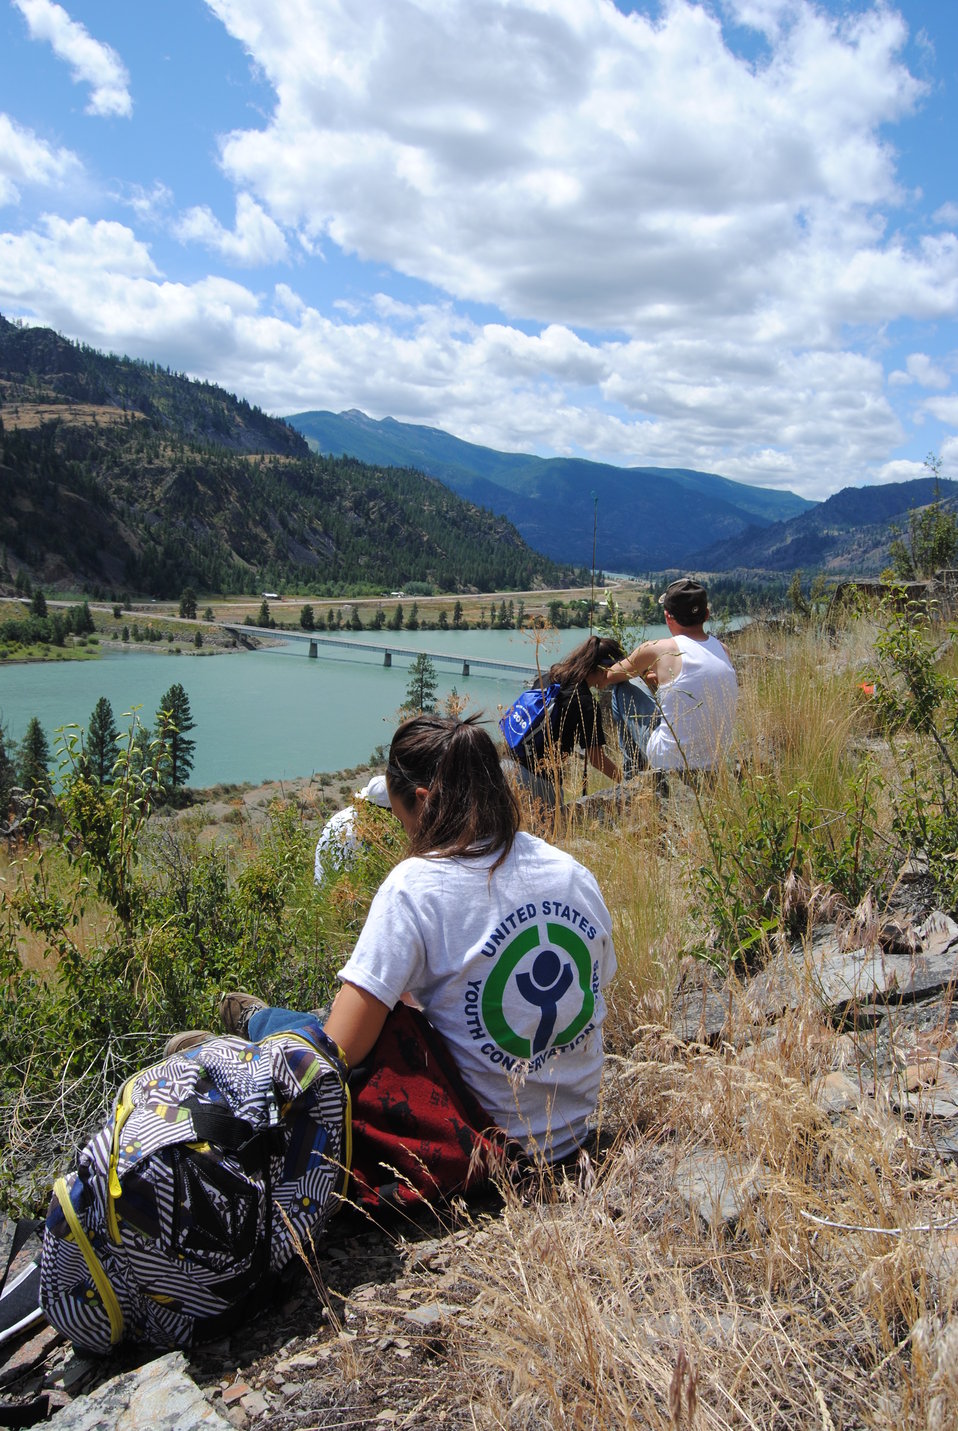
Week 6 project. Western Fence Lizard Survey in Perma, MT.

Emily McCrea and the rest of the YCC crew take a break and enjoy an amazing view.

Credit: USFWS

Photo Contest Entry #192